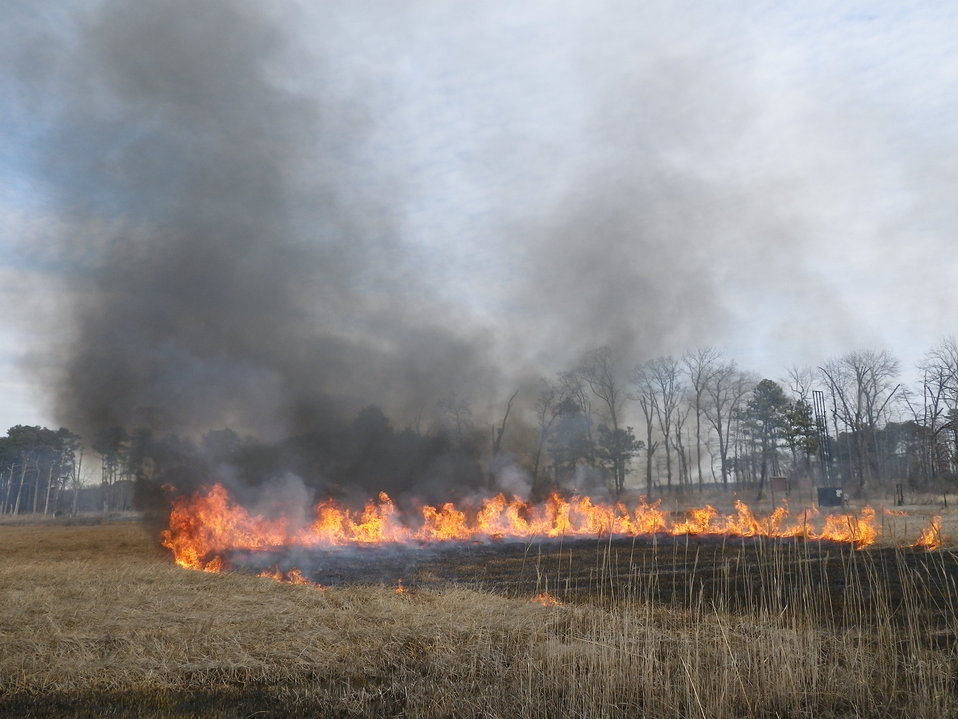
Eastern Neck National Wildlife Refuge controlled burn

March, 2011, Eastern Neck National Wildlife Refuge, Maryland: A controlled burn helps keep invasive species out of natural areas, promoting growth of wildlife habitat on the Delmarva Peninsula.